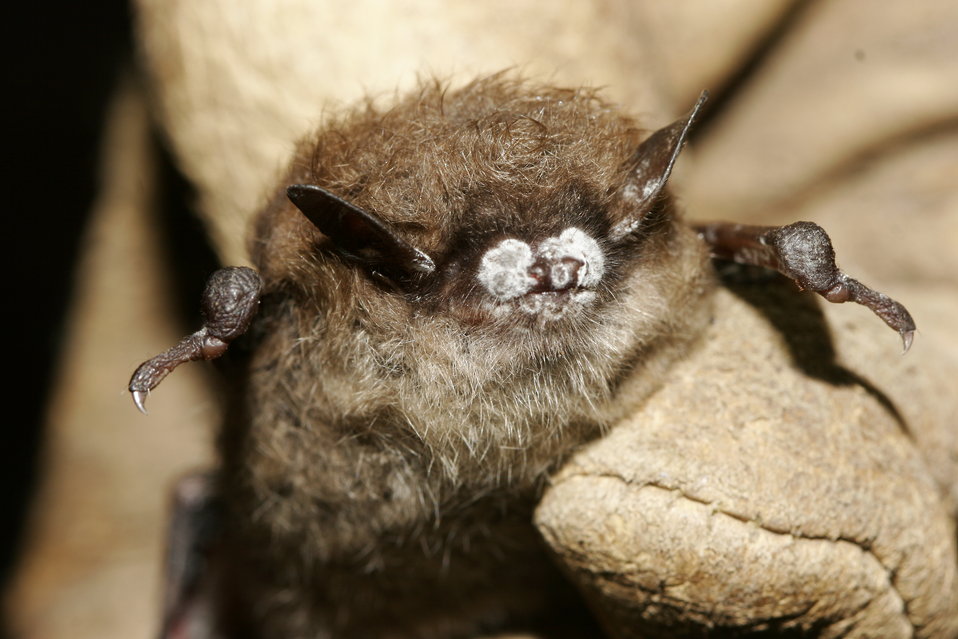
Little brown bat; close-up of nose with fungus, New York, Oct. 2008.

Credit: Photo courtesy Ryan von Linden/New York Department of Environmental Conservation

Image size: 3504p (49 in.) W x 2336p (32 in.) H, 72 ppi, 2.6 MB